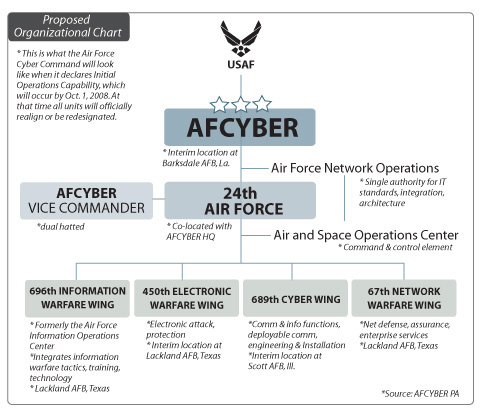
AFCYBER command

Proposed organizational structure for AFCYBER when it declares Initial Operations Capability.